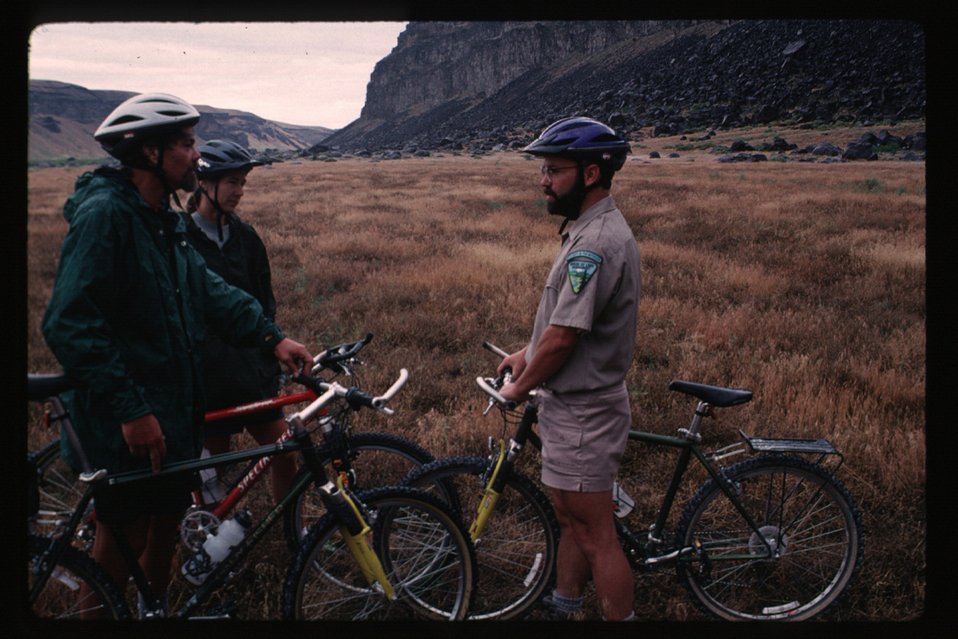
Ranger speaking with bikers Idaho State Office LSRD Lower Snake River District